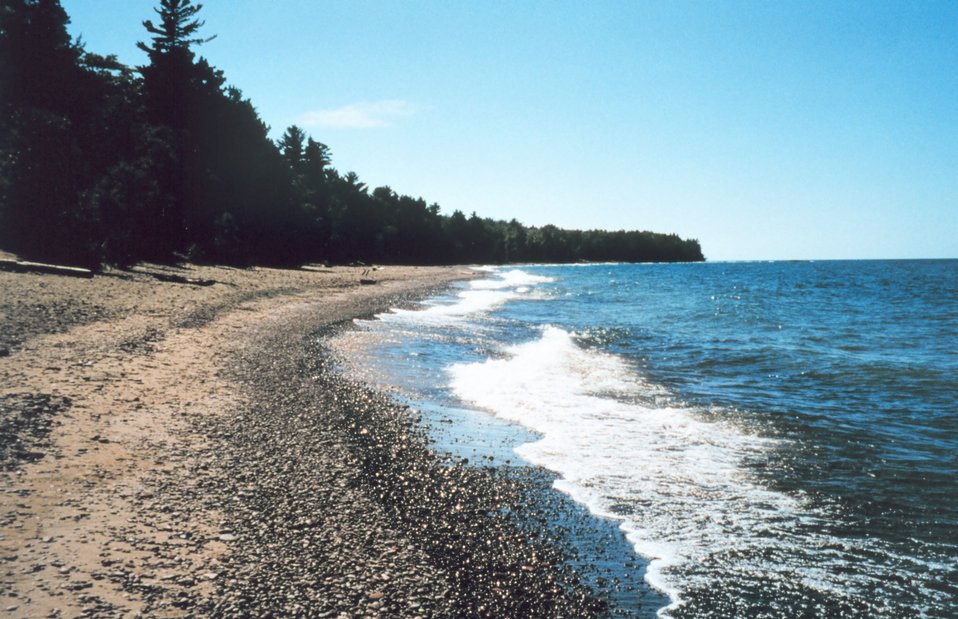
Shoreline at Petoskey State Park